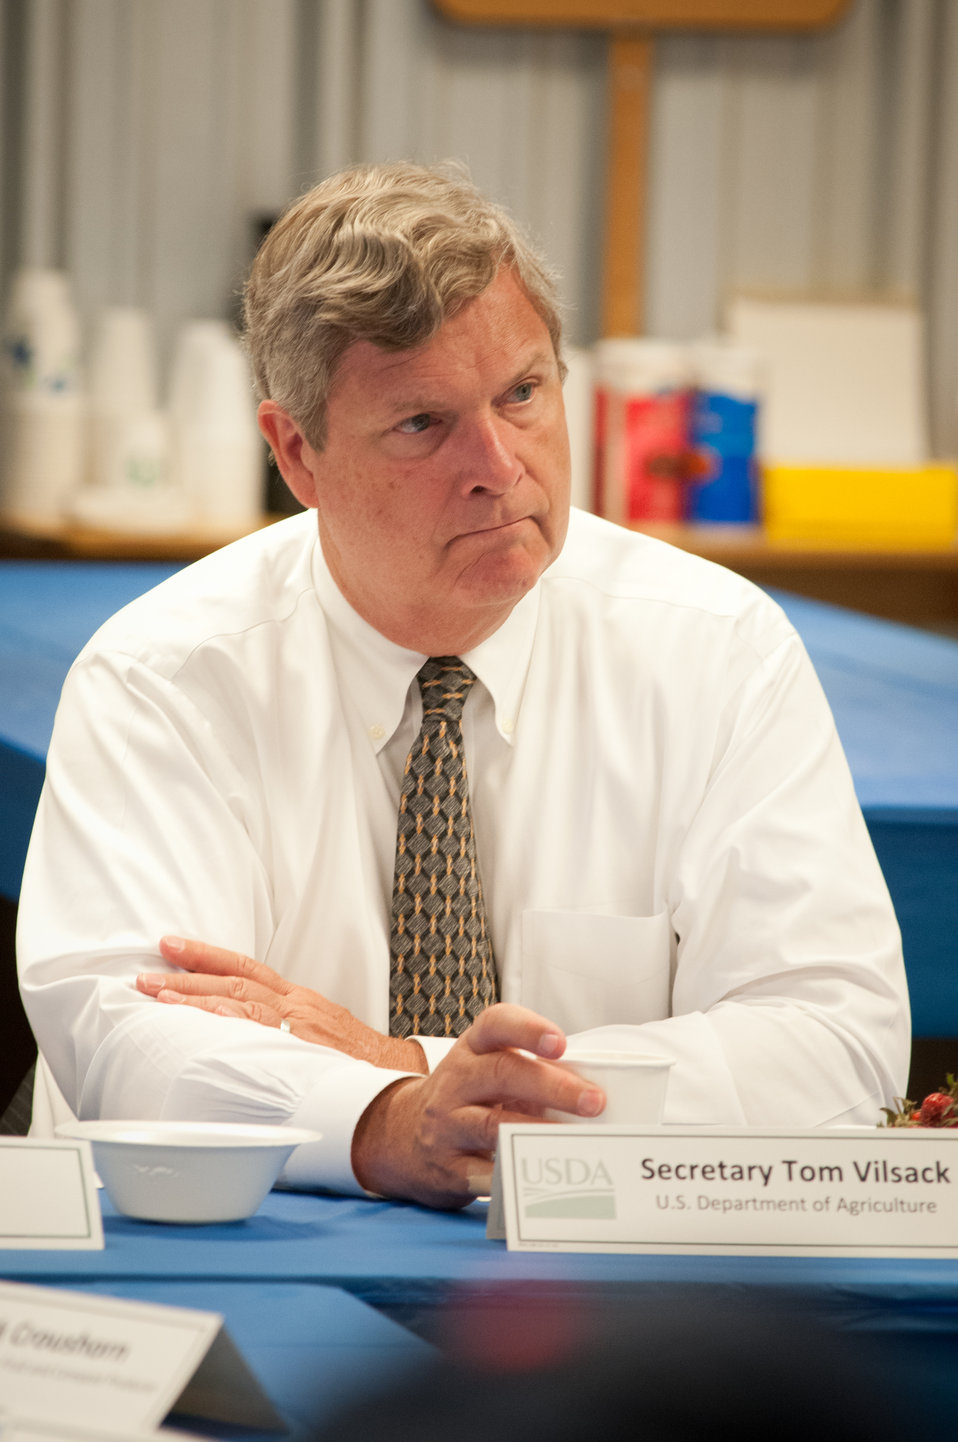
Agriculture Secretary Tom Vilsack held a round table discussion with local producers to listen to the producers concerns and answer their questions at Blue Ridge Produce in Elkwood, VA on Thursday, May 30, 2013. Blue Ridge Produce is a local food hub aggregating Virginia-grown fruits and vegetables for sale to wholesale customers in the Capitol region and strives to build a value-based relationship with Virginia growers of all sizes by handling the marketing and logistics to get their produce from farm to customer.